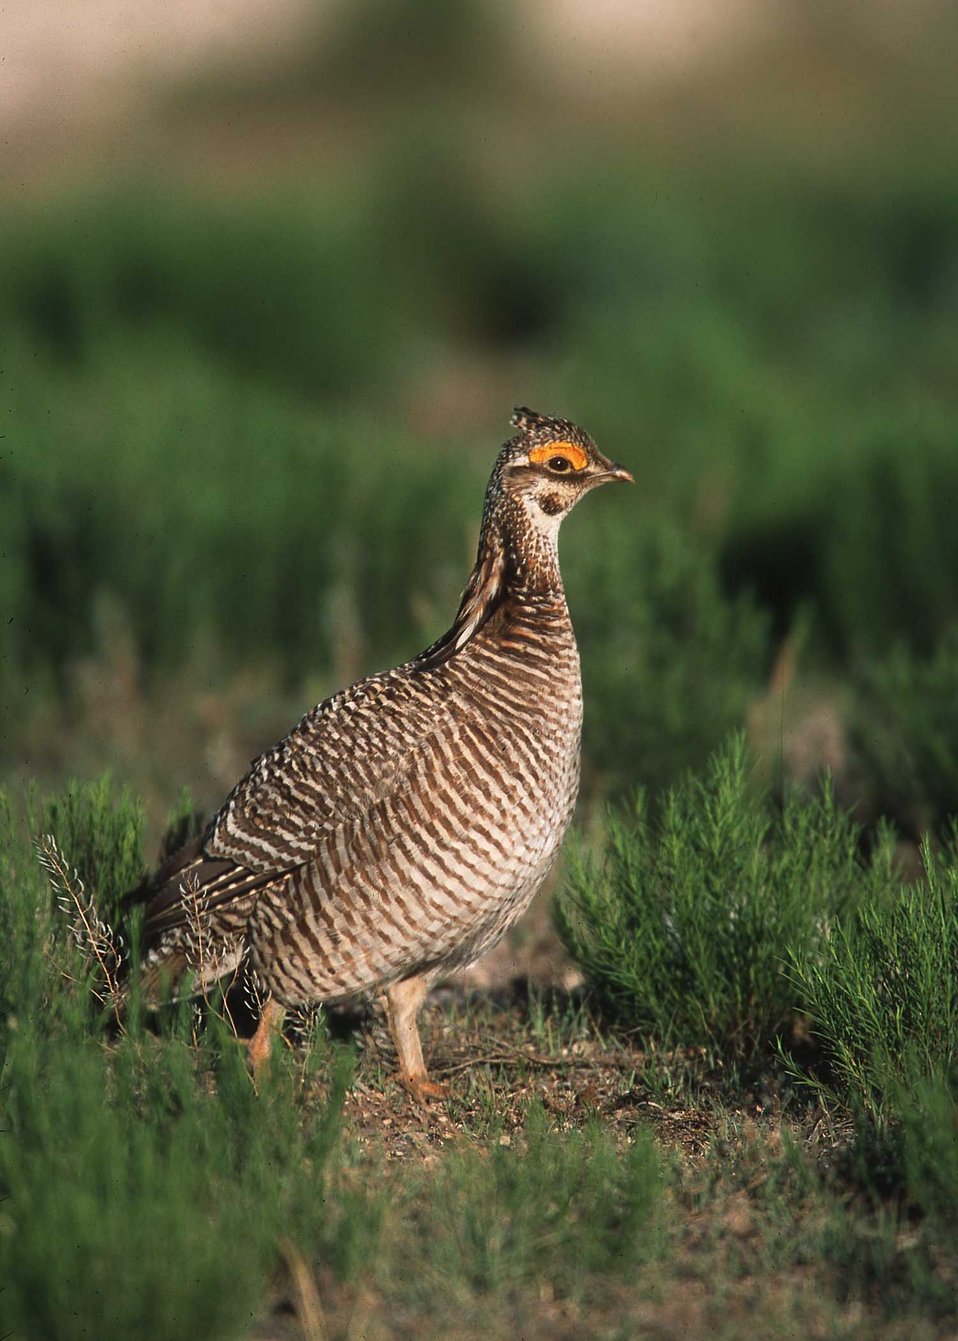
Lesser prairie chicken in Eastern New Mexico.